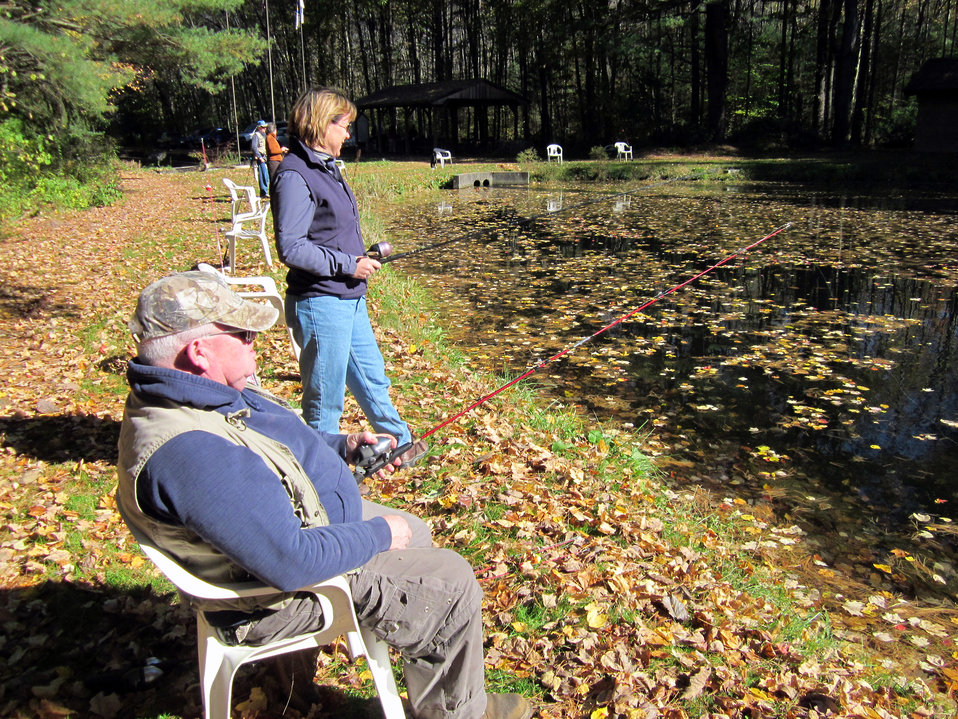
Deputy Director casts a line

October 13, 2012, Sunderland, MA: Deputy Regional Director Deb Rocque (center) fishes for trout in a pond at the U.S. Fish and Wildlife Service's Richard Cronin National Salmon Station. Volunteer Russ Merrill sits in the foreground.